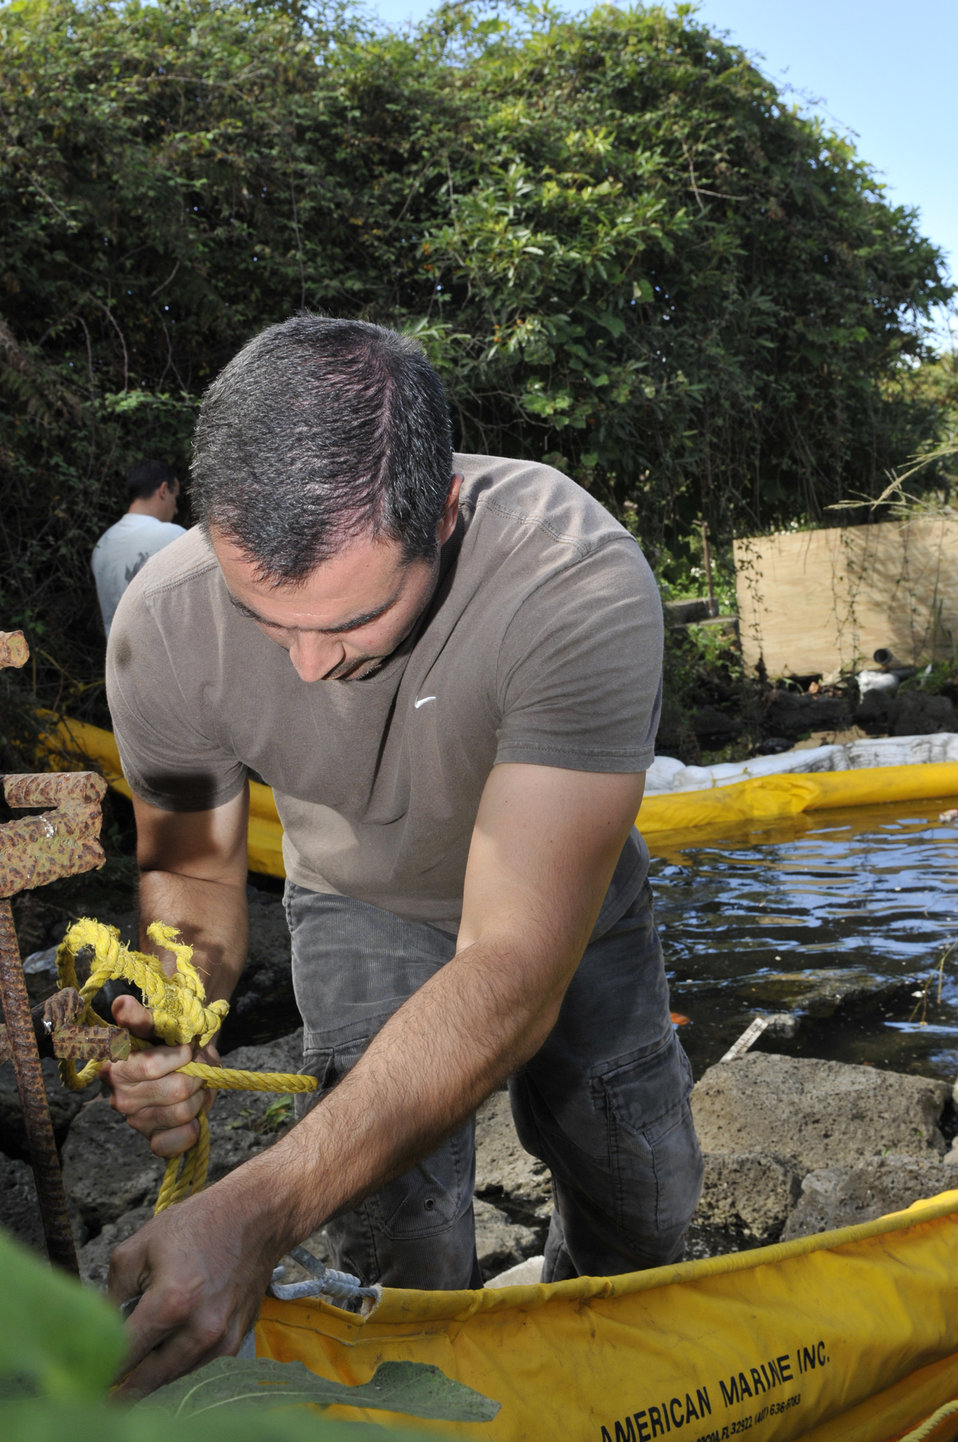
Lajes oil spill training

Marco Rosa anchors a boom for stability purpose during a land fuel spill training exercise Sept. 29, 2010, at Lajes Field, Azores. The joint exercise brought together more than 40 U.S. and host nation emergency response personnel in a classroom-discussion setting and hands-on scenarios. Mr. Rosa is from the 65th Civil Engineer Squadron .